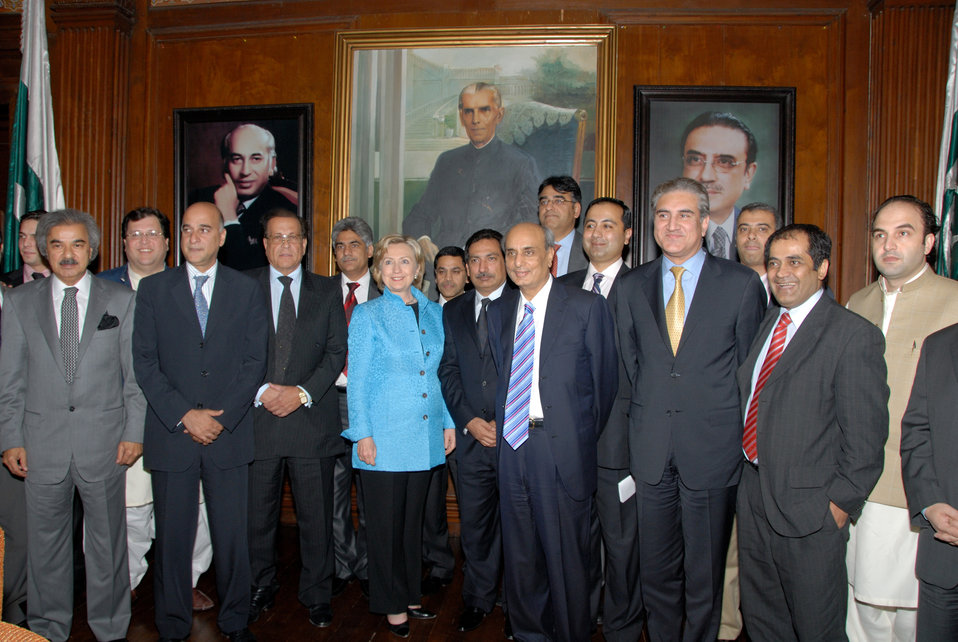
Secretary Clinton Meets With Pakistani Business Leaders

U.S. Secretary of State Hillary Rodham Clinton meets with prominent business leaders in Lahore, Pakistan October 29, 2009. Governor Punjab Salmaan Taseer, Foreign Minister Shah Mahmood Qureshi also attended the meeting.